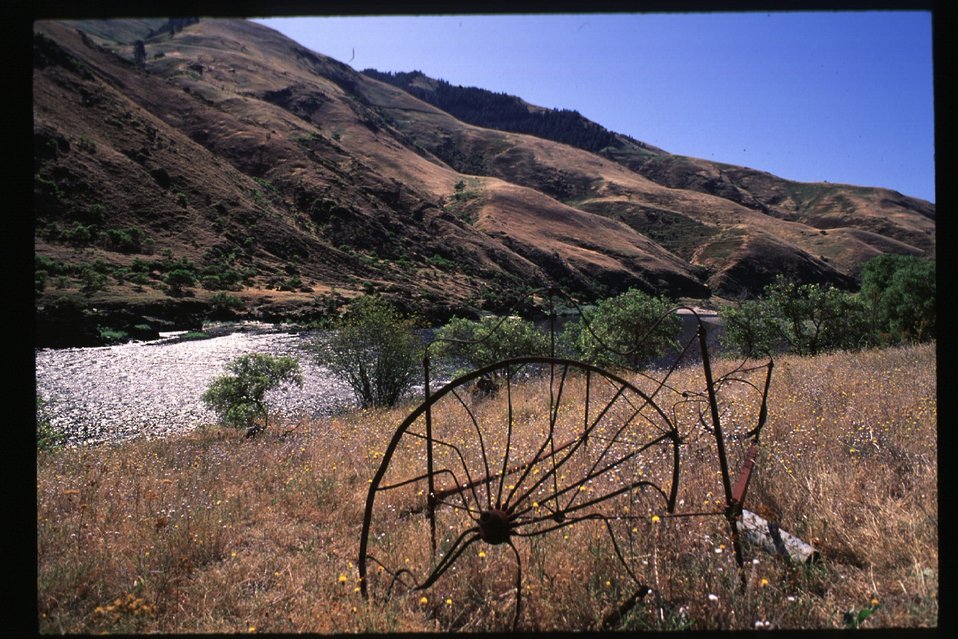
Wagon wheel and bed frame Lower Salmon River Cottonwood Field Office UCSC Upper Columbia Salmon Clearwater District